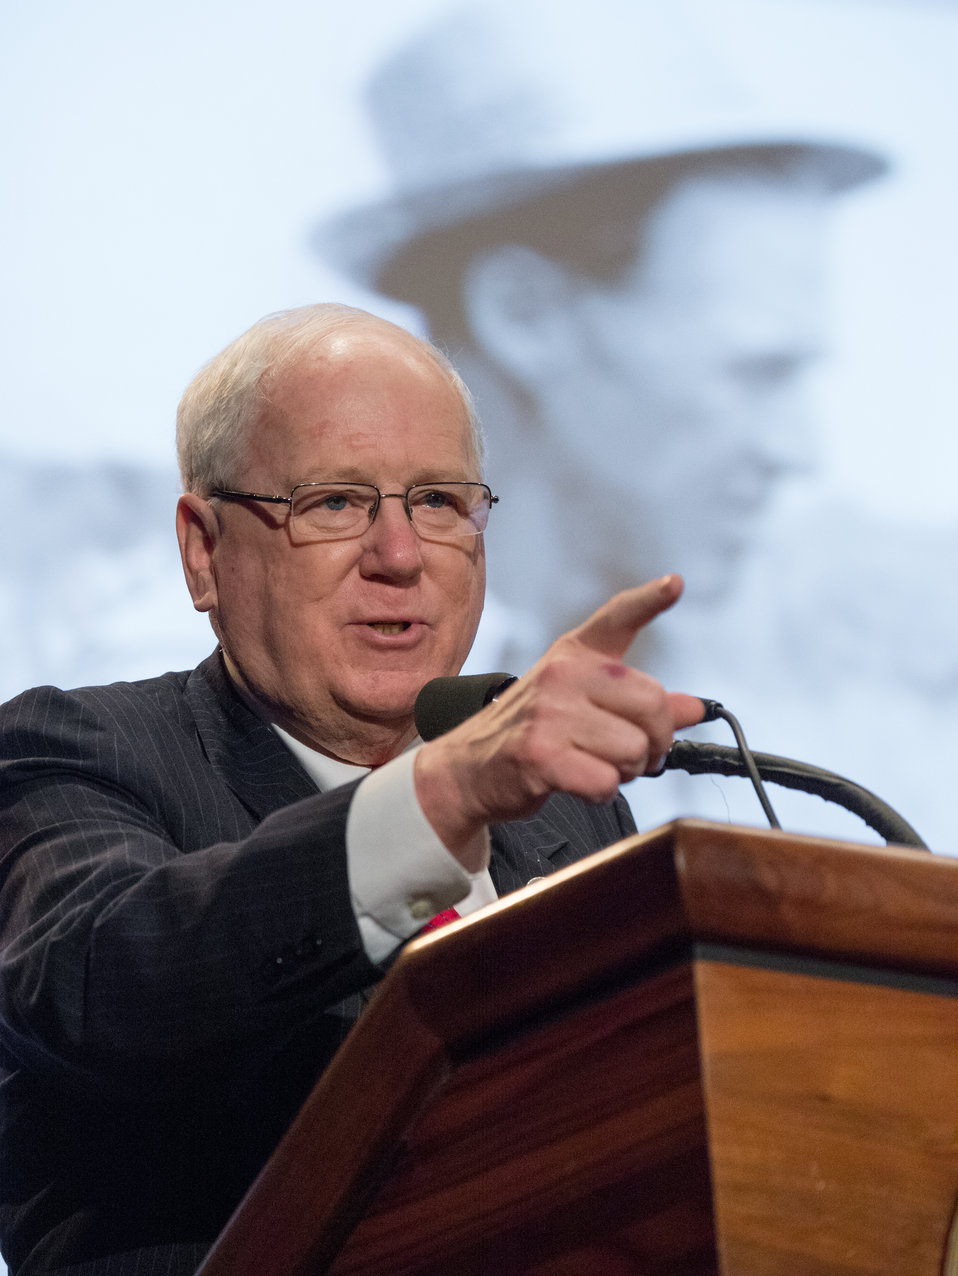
World Food Prize Ambassador Ken Quinn introduces the second panel moderator for the Borlaug Symposium Binghamton, NY high school student Nosa Akol, participates in the discussion panel titled 'I am Dr. Borlaug's Vision - I Can Make a Difference' during the Borlaug Symposium commemorating the late Dr. Norman E. Borlaug's 100th Birthday hosted by the U. S. Department of Agriculture (USDA) in the Jefferson Auditorium of USDA in Washington, D.C. on Tuesday, Mar. 25, 2014. The symposium highlighted current efforts addressing global hunger.